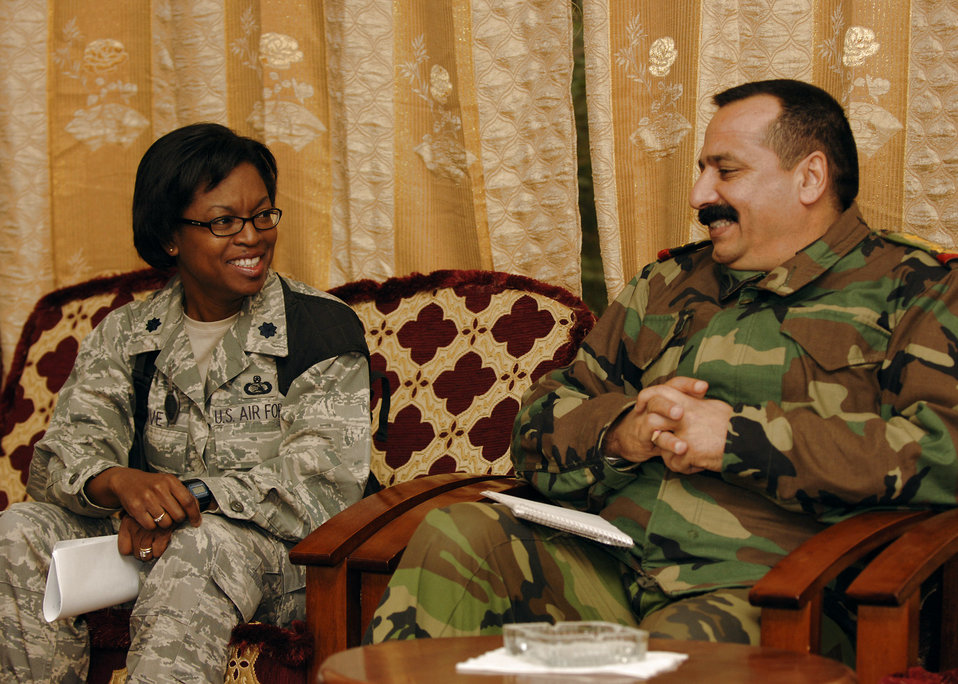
Airmen show Iraqi army leaders base operations

Lt. Col. Jeri Harvey discusses upcoming projects with Iraqi army staff Brig. Gen. Abdul Mahady Sharaque Sabah Nov. 23 at Taji Military Base, Iraq. Colonel Harvey is the senior adviser for the logistics military advisory team and a native of St. Louis. She is the adviser to General Sabah, the Taji Location Command commander.